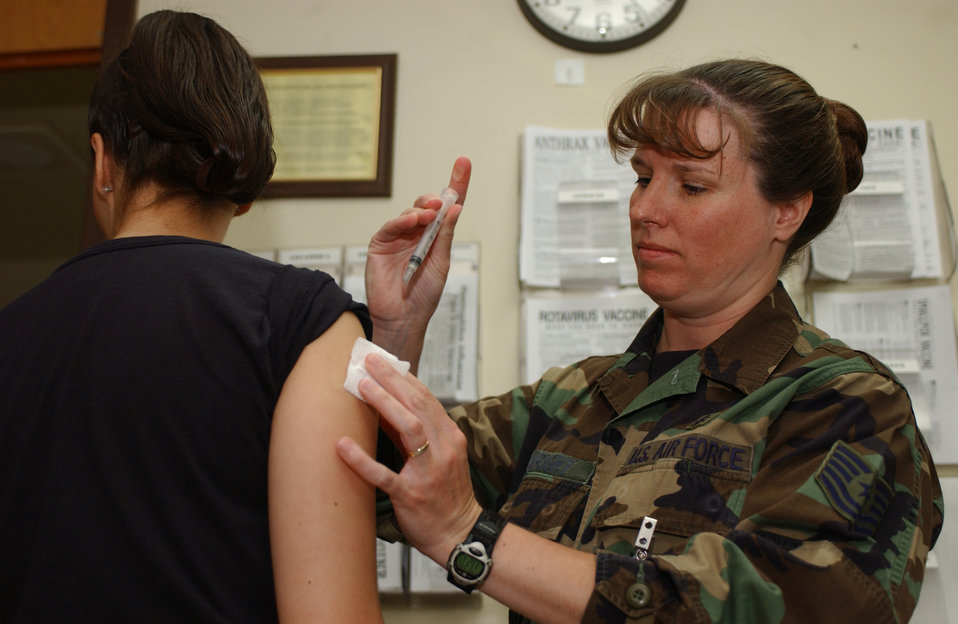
10,000th Anthrax Shot

Tech. Sgt. Shirley Wright (right) administers the 10,000th anthrax vaccine for Osan Air Base, South Korea, to Master Sgt. Nichole Reynolds June 6. The base maintains an outstanding compliance and contributes to Pacific Air Force being number one in the Air Force for anthrax vaccination compliance. Both sergeants are with the 51st Medical Operations Squadron.